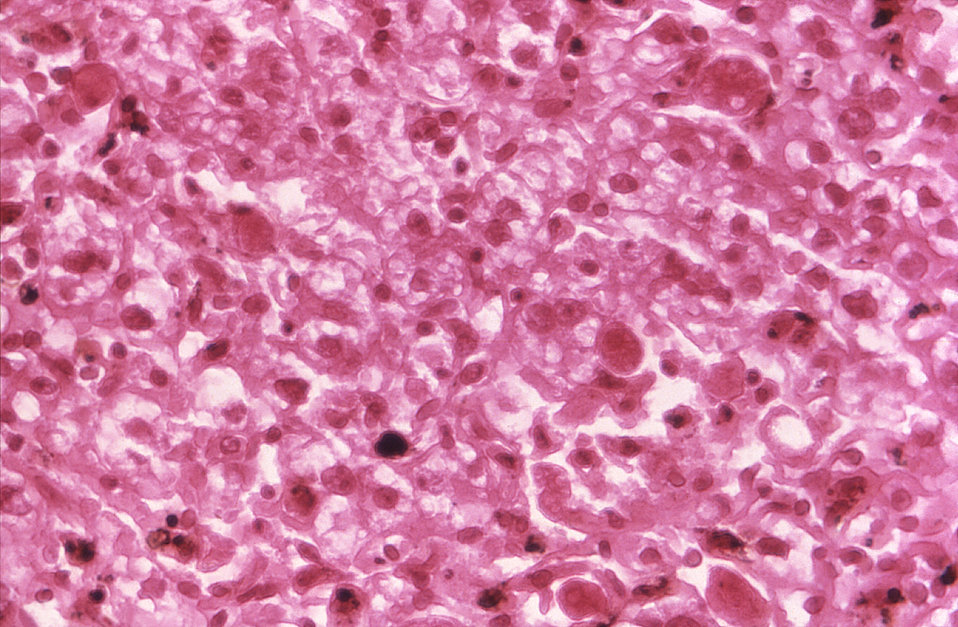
This photomicrograph revealed some of the histopathologic cytoarchitecture found in a section of liver tissue, which was harvested during an autopsy of a victim of yellow fever. Of particular interest, is the presence of 'councilman bodies', or councilman 'hyaline' bodies, which are eosinophilic in nature, and found in liver specimens of those individuals ill with yellow fever.Yellow Fever Symptoms